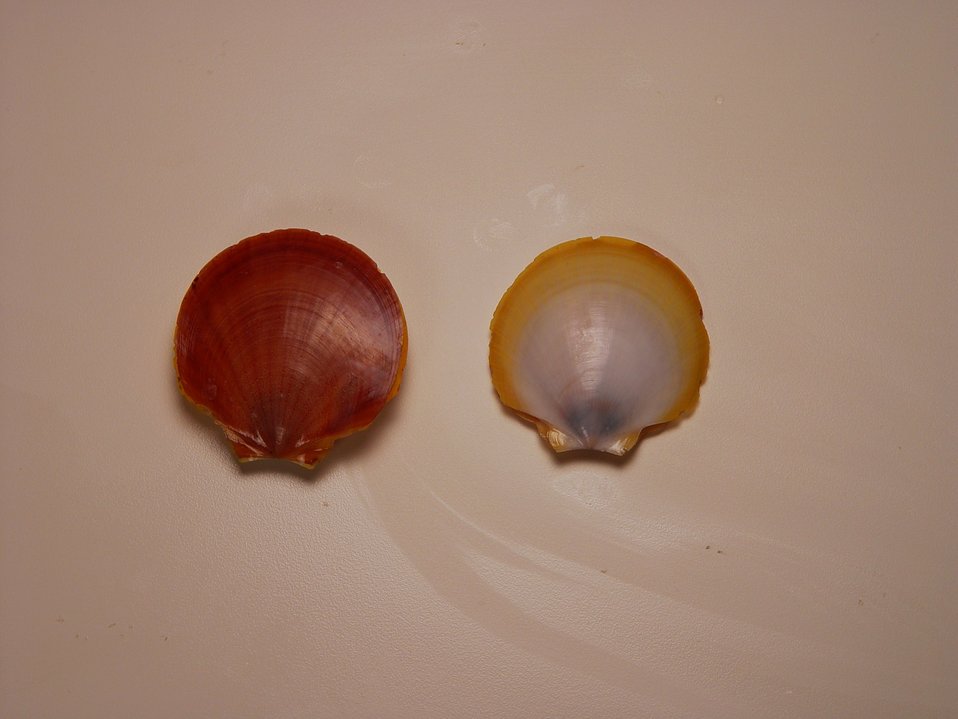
Paper scallop ( Amusium papyraceum )